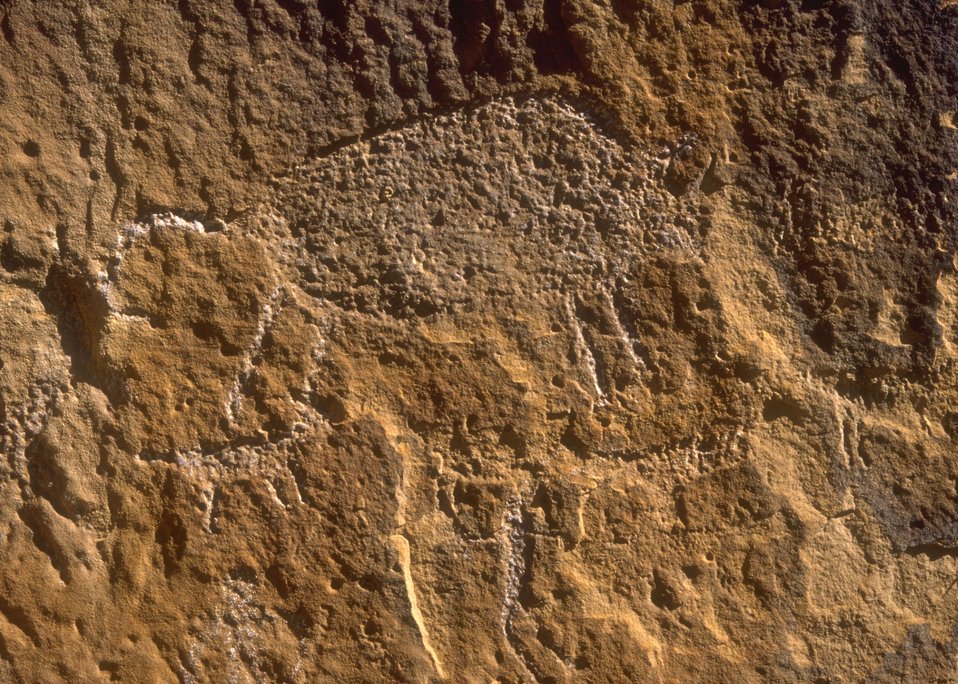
Petroglyph panel in Whoopup Canyon, Newcastle Field Office.